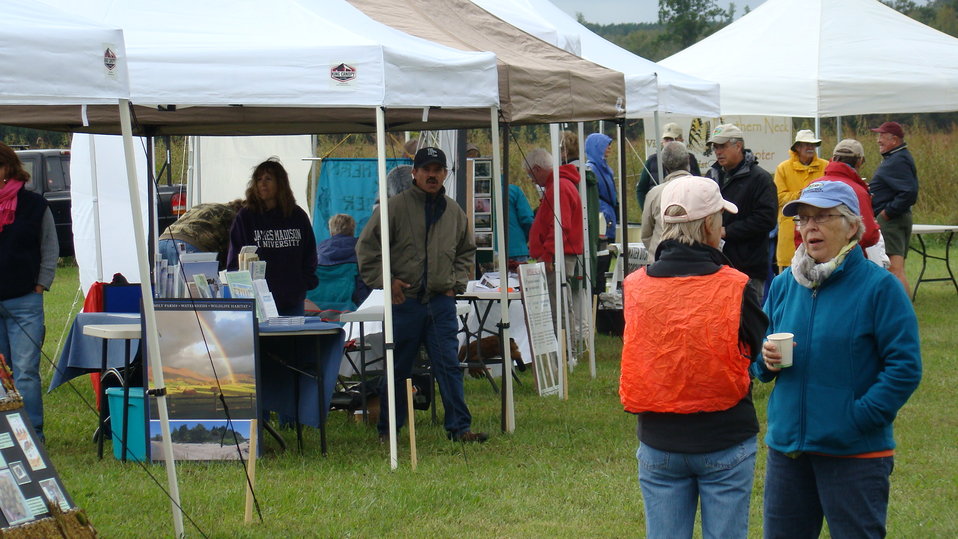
Rappahannock River Valley NWR 15th Anniversary

Twenty exhibitors participated in 'Go Wild!'